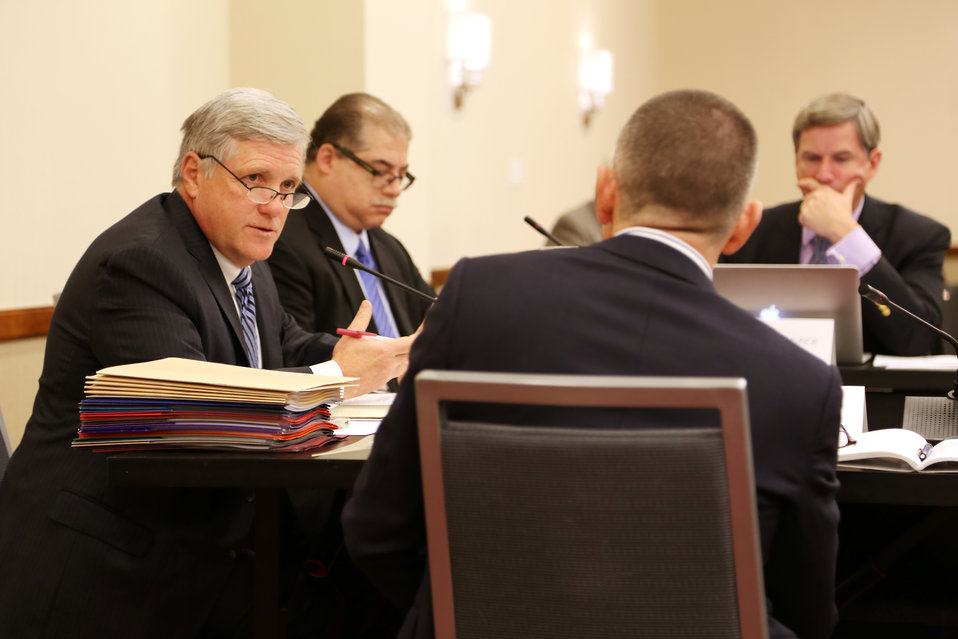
Wildlife Trafficking Advisory Council Meeting March 20, 2014